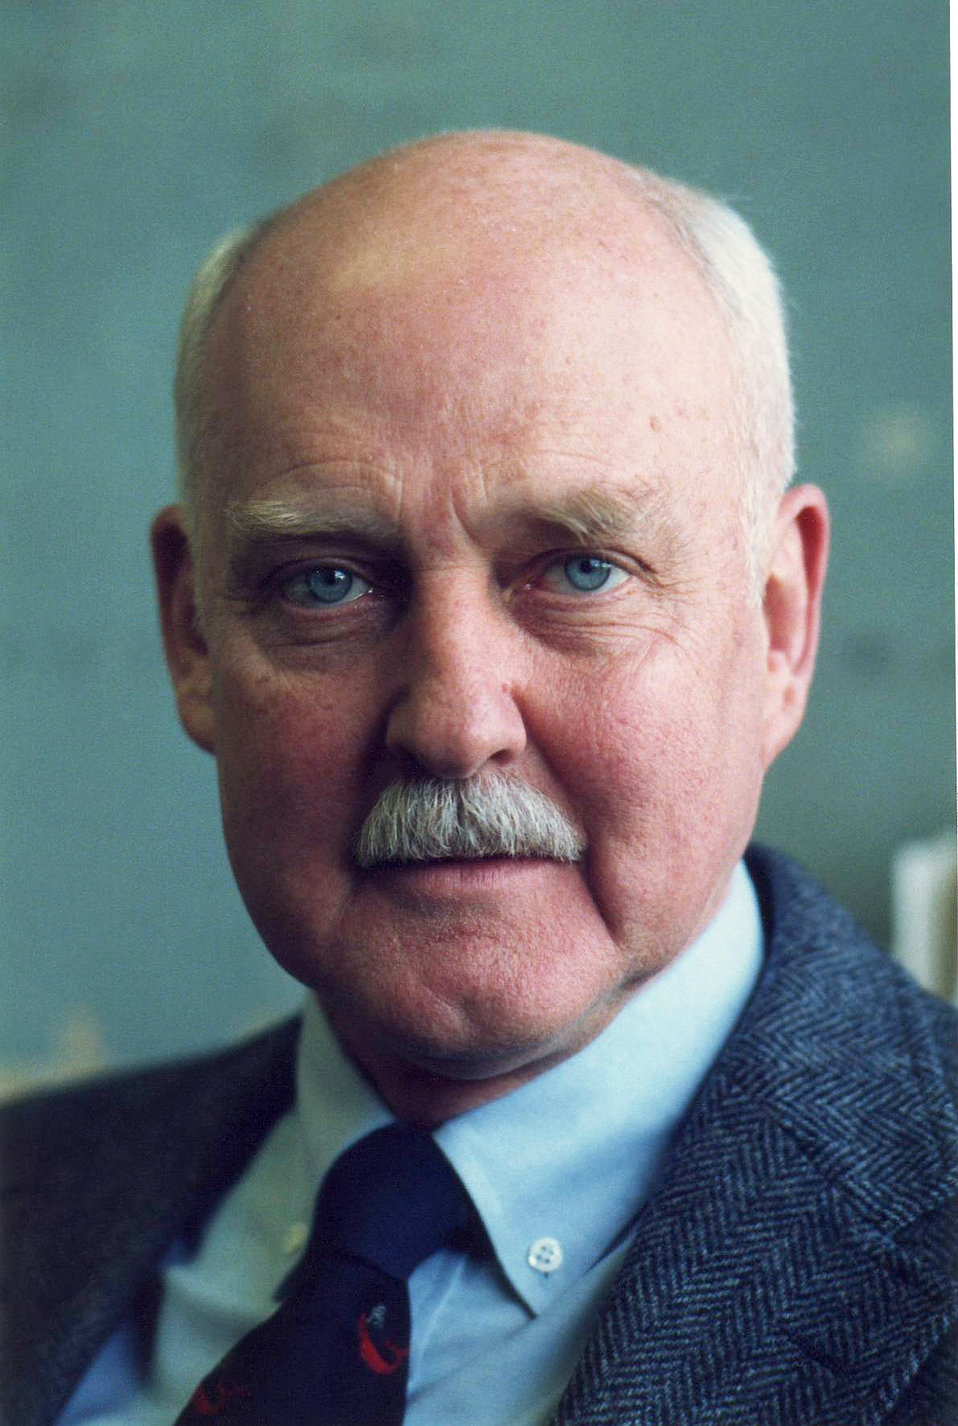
Michael B. Gregg, M.D. (1930 - 2008)